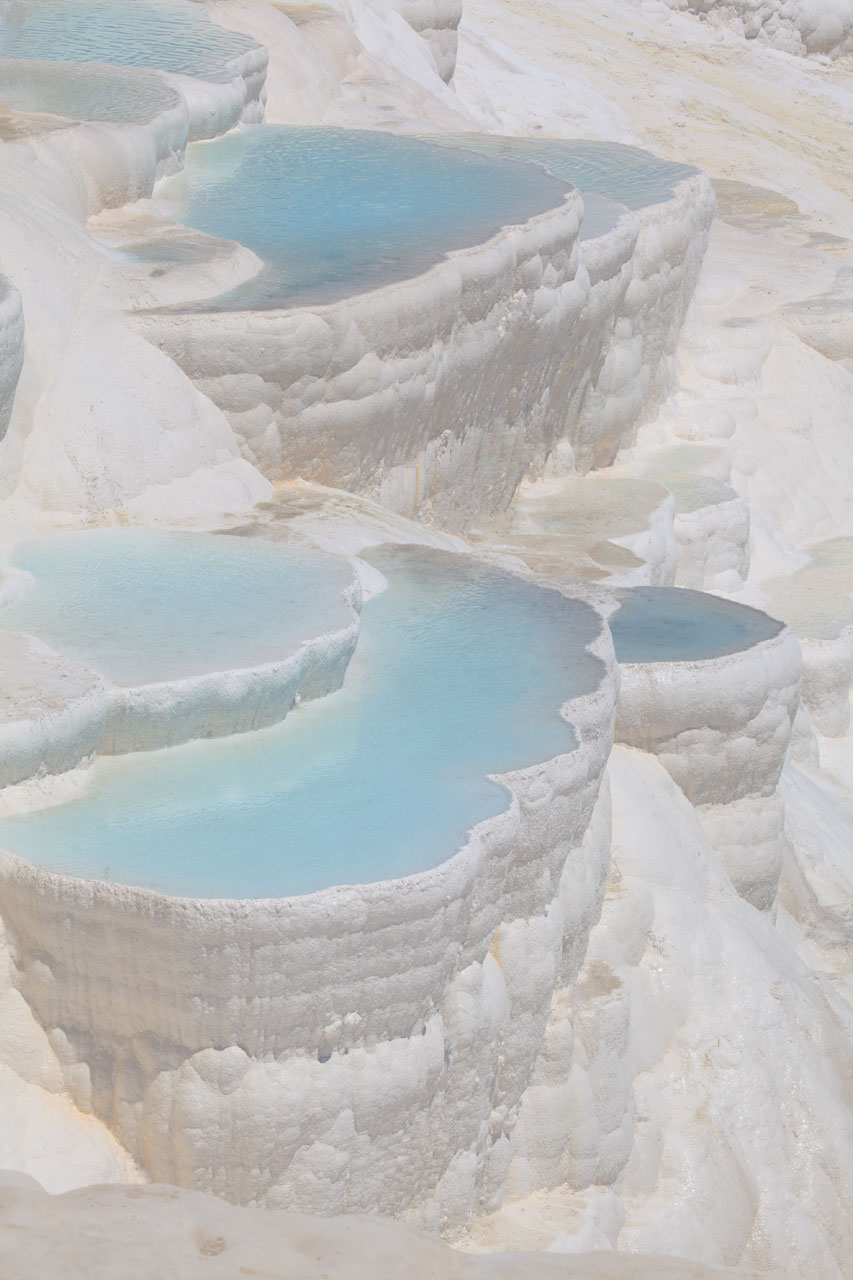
Pamukkale terraces

Pamukkale travertines.